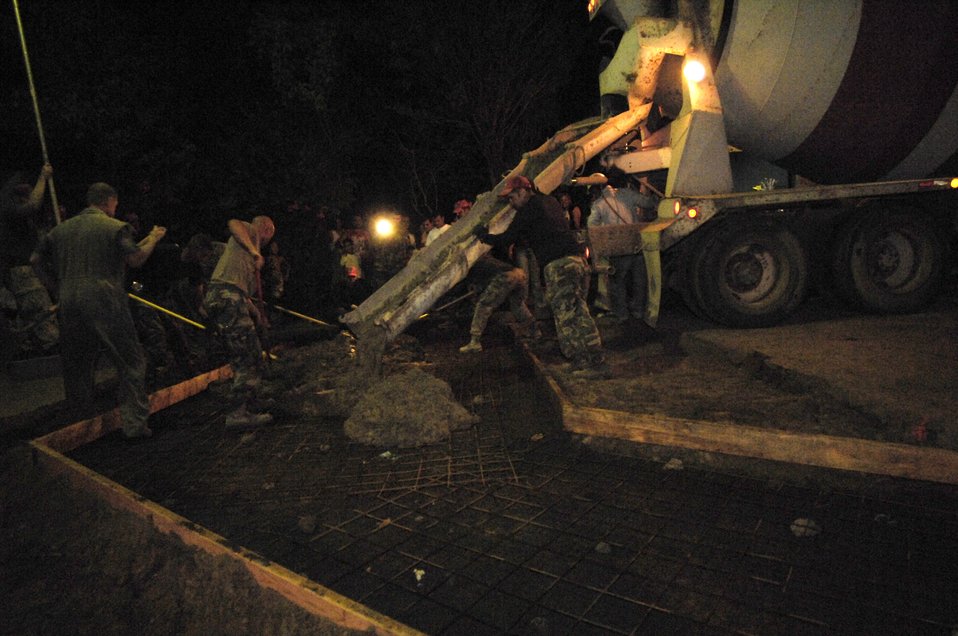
New Horizons-Nicaragua 2007

Airmen deployed with 820th Expeditionary Red Horse Squadron pour concrete March 2 for a new roadway in Santa Teresa, Nicaragua. The effort was part of New Horizons-Nicaragua 2007, a $7.25 million joint U.S. and Nicaraguan military humanitarian and training exercise, providing a new school, and medical clinic, as well as free health and veterinary care, giving aid and strengthening bonds between the two nations.